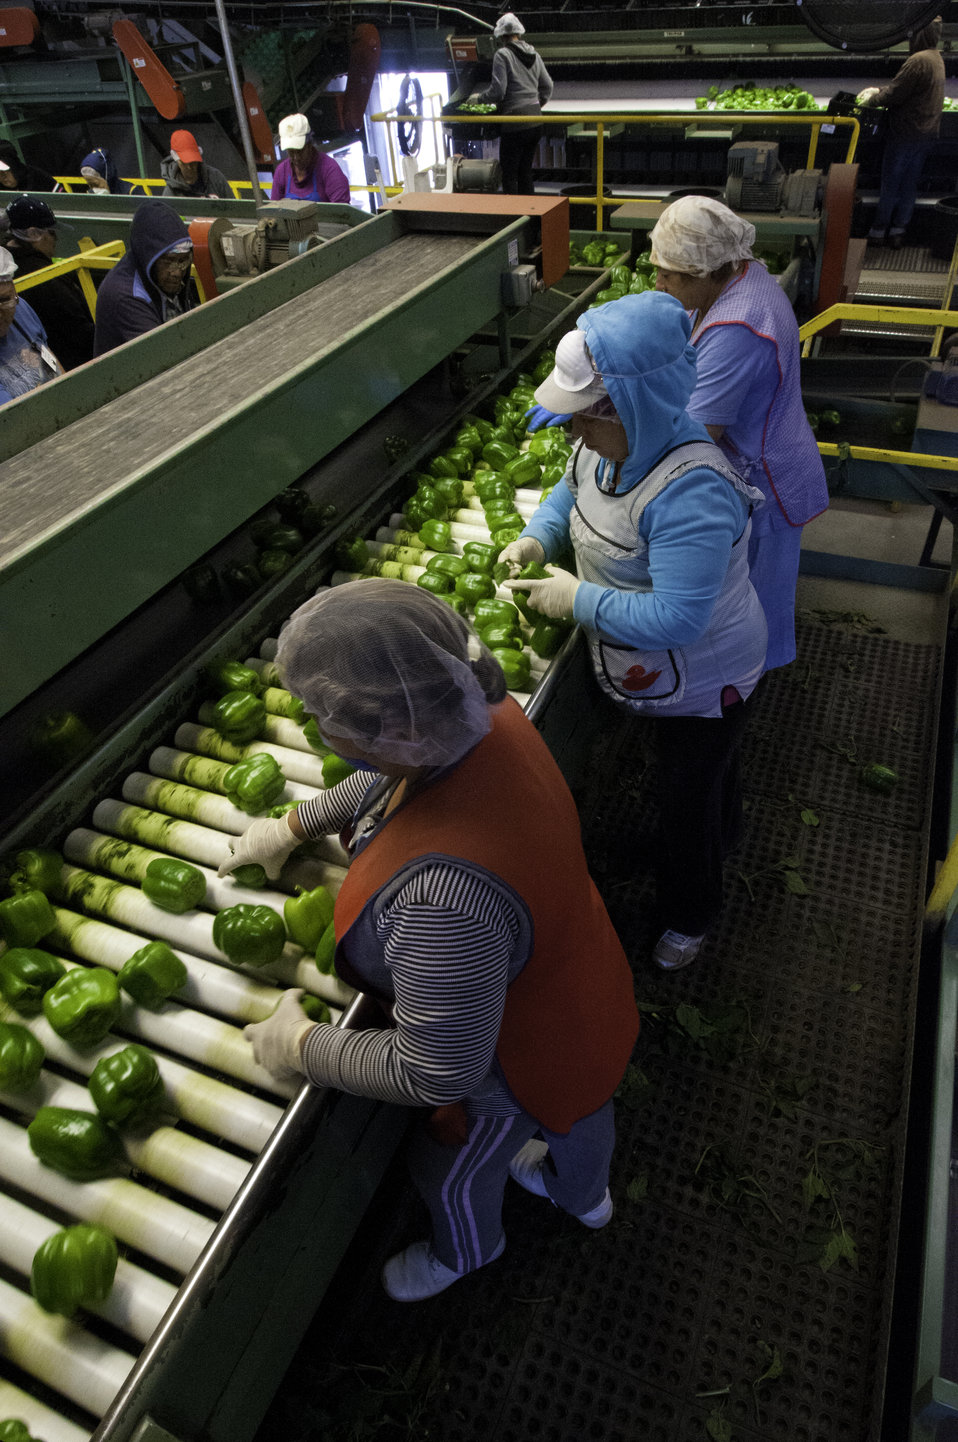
Migrant workers process green peppers on Uesugi Farms in Gilroy, CA on Wednesday, Aug. 28, 2013.